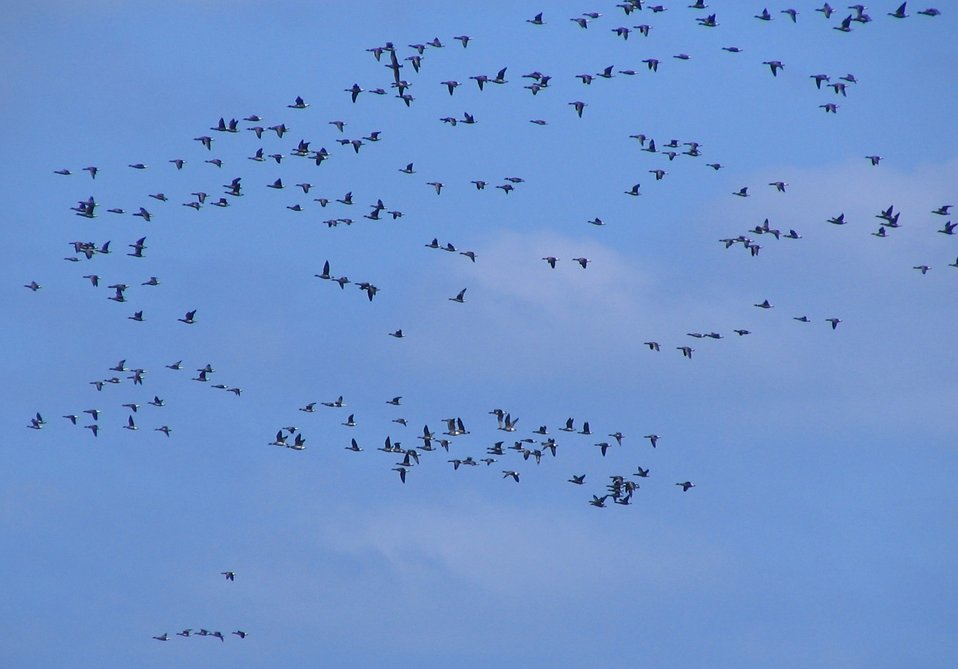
Brant at Izembek Lagoon

Izembek National Wildlife Refuge